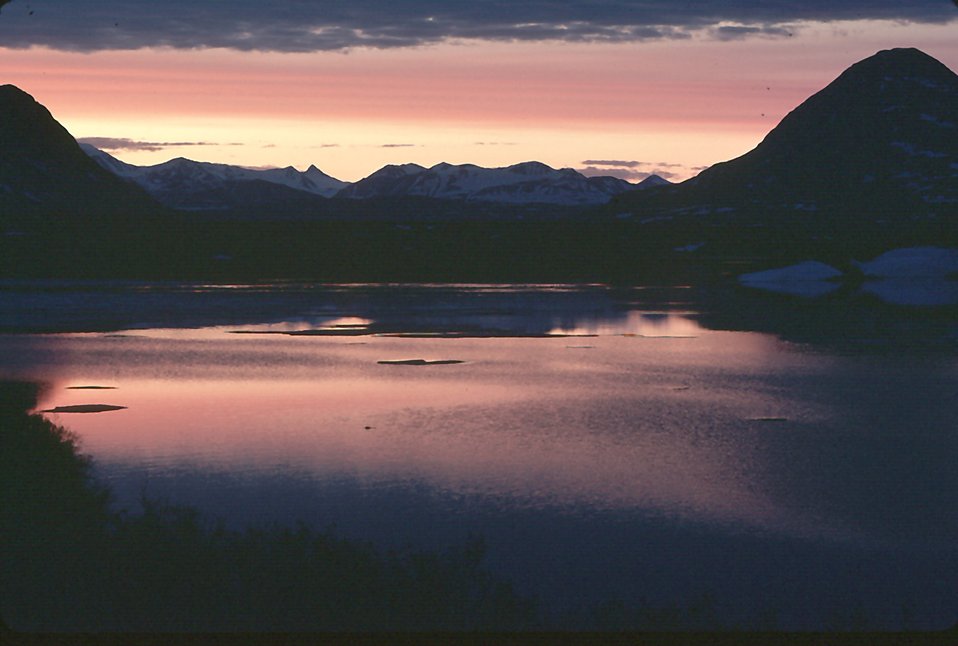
Sunset at Tangle Lakes, Denali Highway, Alaska